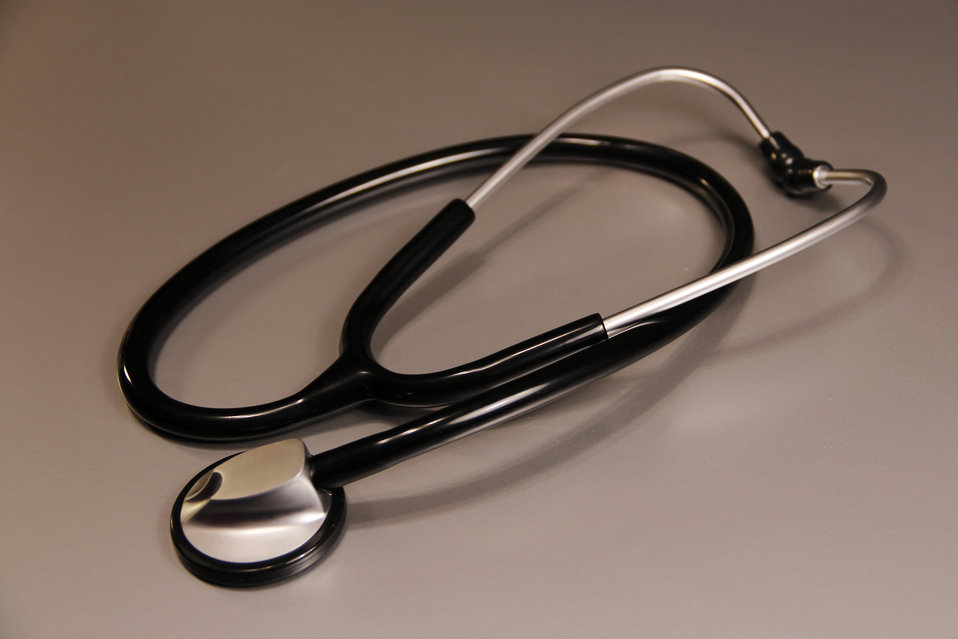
This image depicts a stethoscope lying atop a beige-colored countertop.